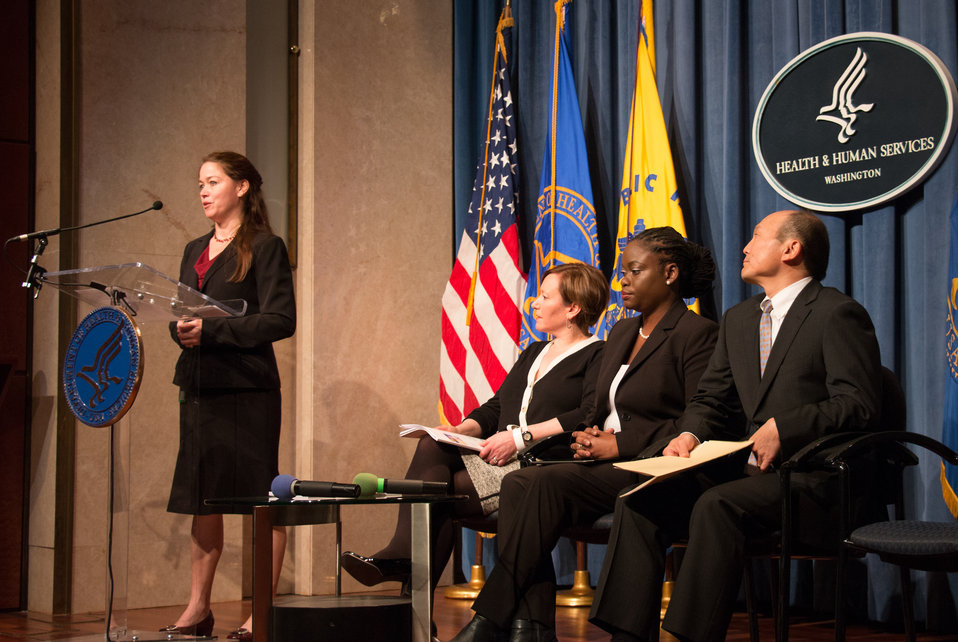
VHAP Launch (251 of 511)